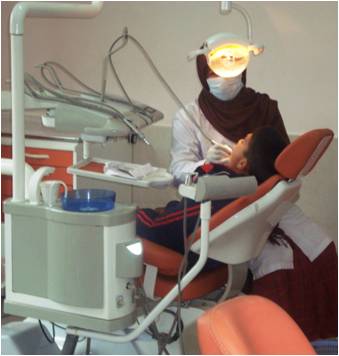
Electricity Powers Dental School

In Afghanistan, electricity is ensuring better lives and brighter smiles. When it opened in March 2007, the Kabul Medical University Dentistry Teaching Clinic was stocked with state-of-the art lab equipment, but faced a major problem: Electricity, needed to power lights and machinery, was scarce and unreliable.
“It was a problem for teaching,” said Dr. Shakib Sobat, a doctor of dental surgery. “Computers, projectors, and machines all stopped when there was no power.” Patient care was also compromised by the lack of power.
All of that changed in early 2009 when reliable electricity began to flow into Kabul with the assistance of the U.S. Government. USAID’s Afghanistan Infrastructure and Rehabilitation Program introduced new power sources to Kabul, ensuring round-the-clock power in the capital city. The Government of the Islamic Republic of Afghanistan began to import more electricity from Uzbekistan, and the Tarakhil Power Plant came on line to serve customers connected to the power grid.
The clinic and its patients and students benefited. Dental surgery no longer required three back-up generators, and services were no longer restricted to daylight hours. Operating costs also dropped. In the past, the clinic depended on a generator that used large amounts of expensive diesel fuel. “We were using it all the time,” said the deputy dean of Kabul Medical University. “Now we don’t need it.”
Today, 500 students are enrolled in the seven-year dental program, including 24 women. Student interns, under the guidance of their professors, treat 80 to 90 patients per day in laboratories dedicated to dental specialties. Patients range in age from eight to 80.
USAID is committed to ensuring a sufficient and stable supply of electricity to all of Afghanistan. With affordable, reliable power, businesses can operate at full capacity, residents can heat their homes, and Afghan citizens can receive the medical care that they need. For those Afghans receiving quality dental care at the Dentistry Teaching Clinic, their healthier smiles are proof that increased electricity improves lives.